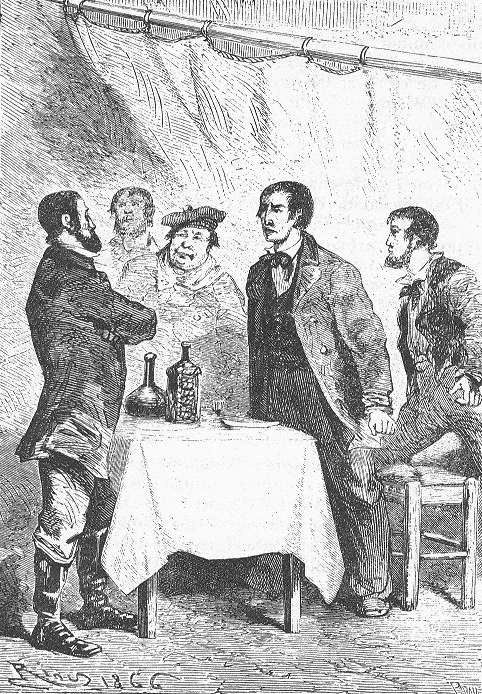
An illustration from Jules Verne's novel 'Journeys and Adventures of Captain Hatteras', part II: 'The Field of Ice' drawn by Édouard Riou and/or Henri de Montaut. Polski: Ilustracja powieści Juliusza Verne'a 'Podróże i przygody kapitana Hatterasa', części II: 'Pustynia lodowa' autorstwa Édouarda Riou i/lub Henri de Montauta. Français : Jules Verne: 'Voyages et aventures du capitaine Hatteras - Le désert de glace', Édouard Riou et Henri de Montaut.